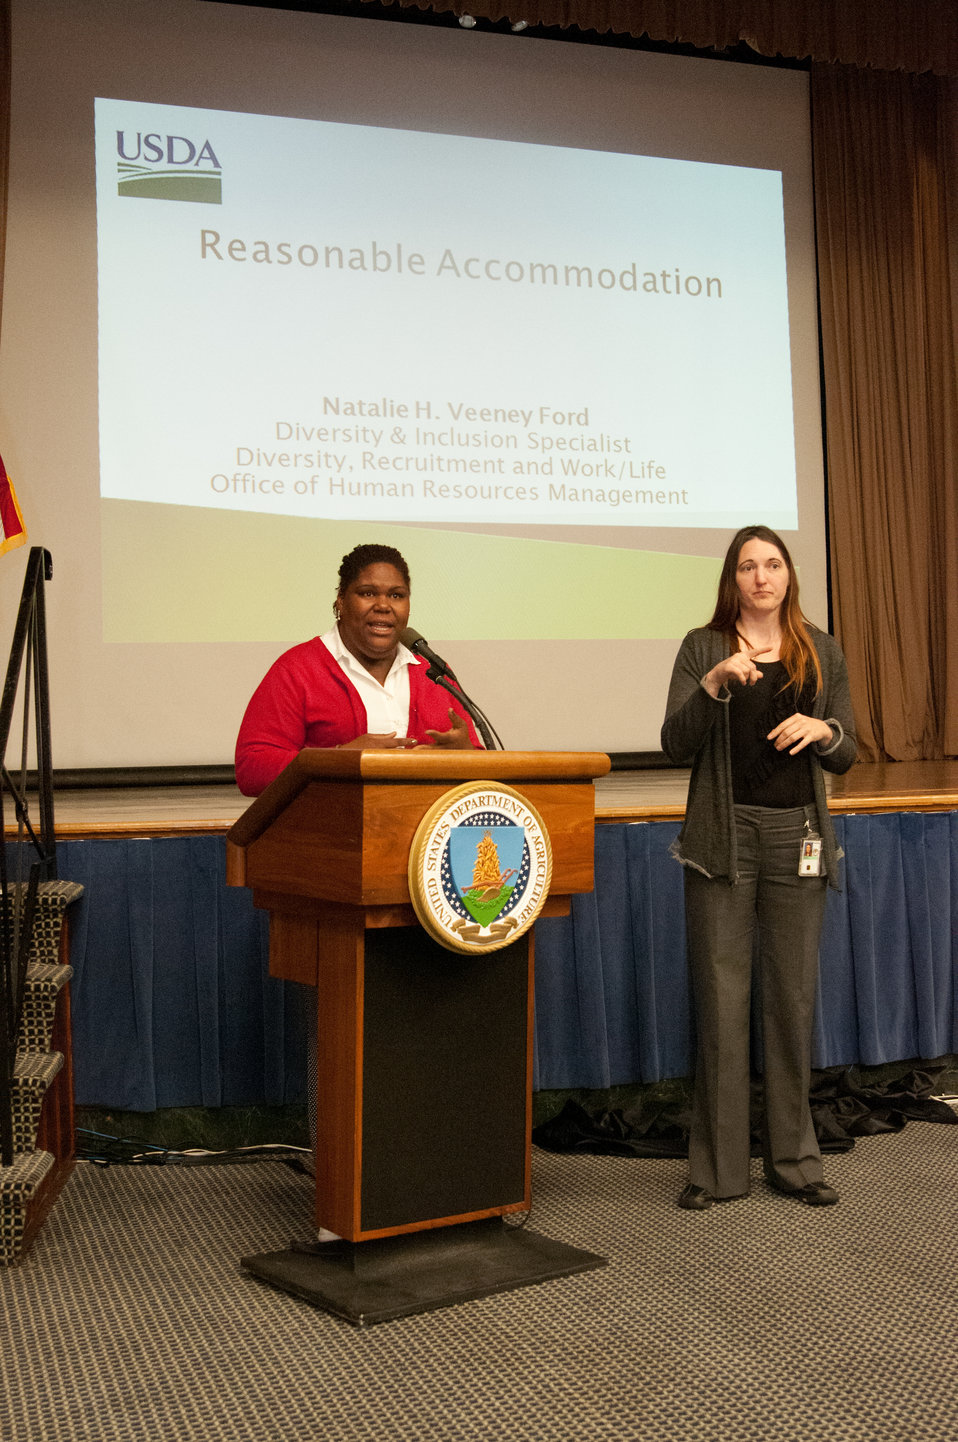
U.S. Department of Agriculture (USDA) Office of Human Resources Management (OHRM) Diversity and Inclusion Specialist Natalie Veeney Ford discusses reasonable accommodations for employees with disabilities at USDA’s OHRM Disability Employment Program Team Training at USDA in Washington, D.C. on Tuesday, May 14, 2013. Nicole Shambounger interprets for hearing-impaired employees during the event.